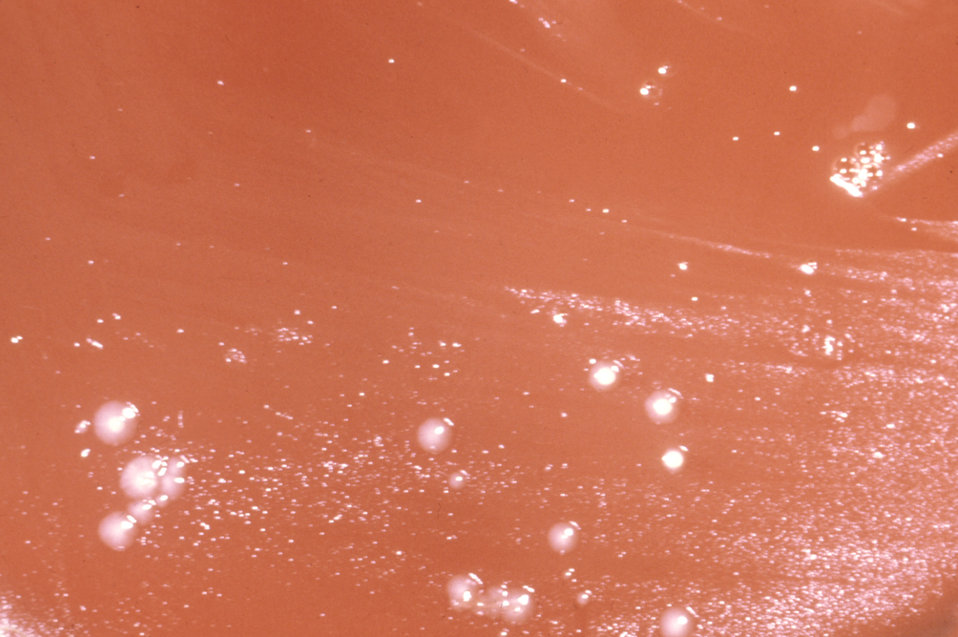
F. mortiferum and C. perfringens, with E. coli and P. vulgaris inhibited, grown on 48hr PEA agar.